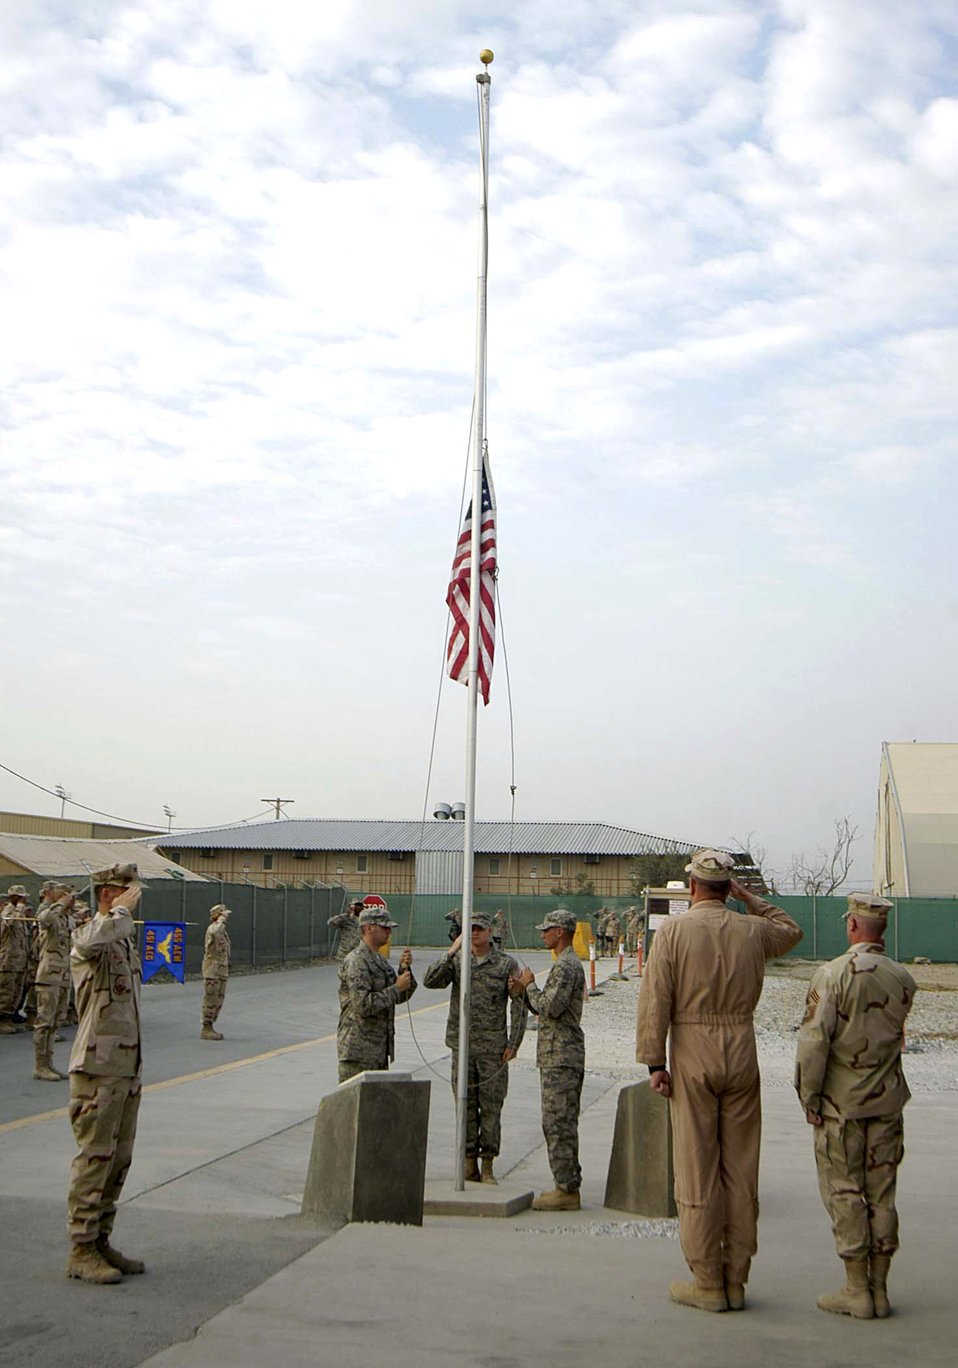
Bagram Airmen honor flag during Air Force birthday

Airmen of the 455th Air Expeditionary Wing salute the flag during a reveille ceremony marking the Air Force's 60th birthday Sept. 18 at Bagram Air Base, Afghanistan. The wing provides a air mobility, aeromedical evacuation, intelligence, surveillance and reconnaissance and close-air support to U.S. and coalition forces throughout Afghanistan.